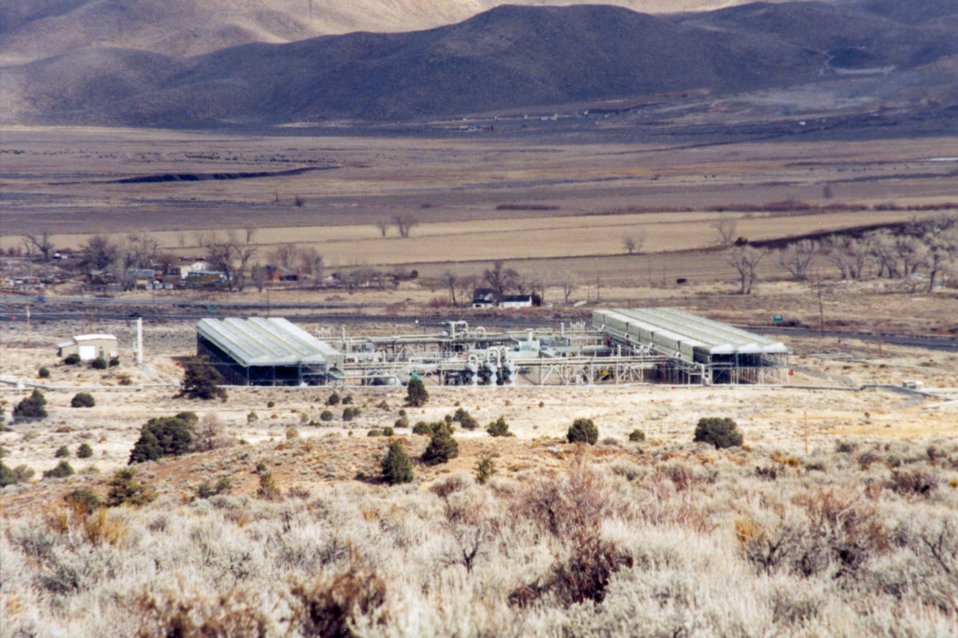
STEAMBOAT GEOTHERMAL POWER PLANTS IN STEAMBOAT SPRINGS, NEVADA.

THE STEAMBOAT SB2 AND SB3 GEOTHERMAL POWER PLANTS IN STEAMBOAT SPRINGS, NEVADA WERE BUILT IN DECEMBER, 1992 ARE OWNED BY STEAMBOAT DEVELOPMENT CORPORATION.